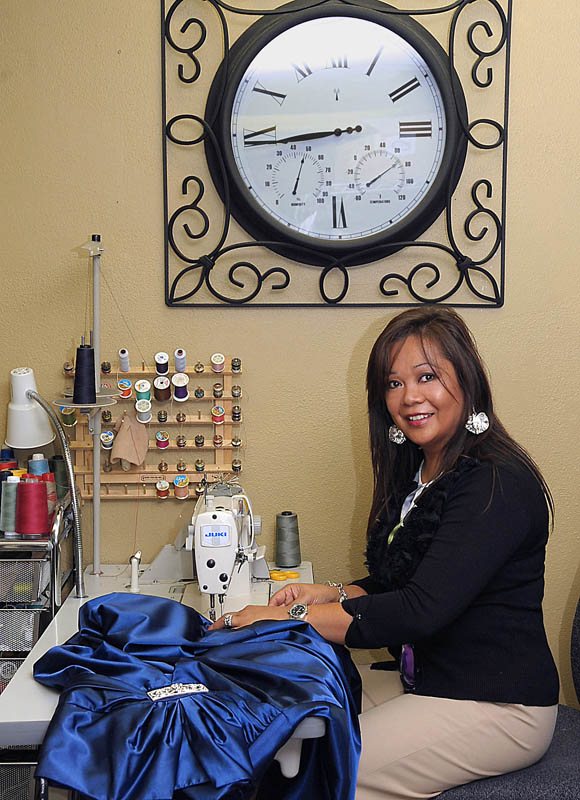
Pay it forward

Myrna Smith, the owner of Myrna's Tailor Shop in Colorado Springs, Colo., makes minor alterations to a dress. Ms. Smith provides formal dresses, free of charge, to high school girls and servicemember's wives who otherwise cannot afford to buy a new dress for formal events.